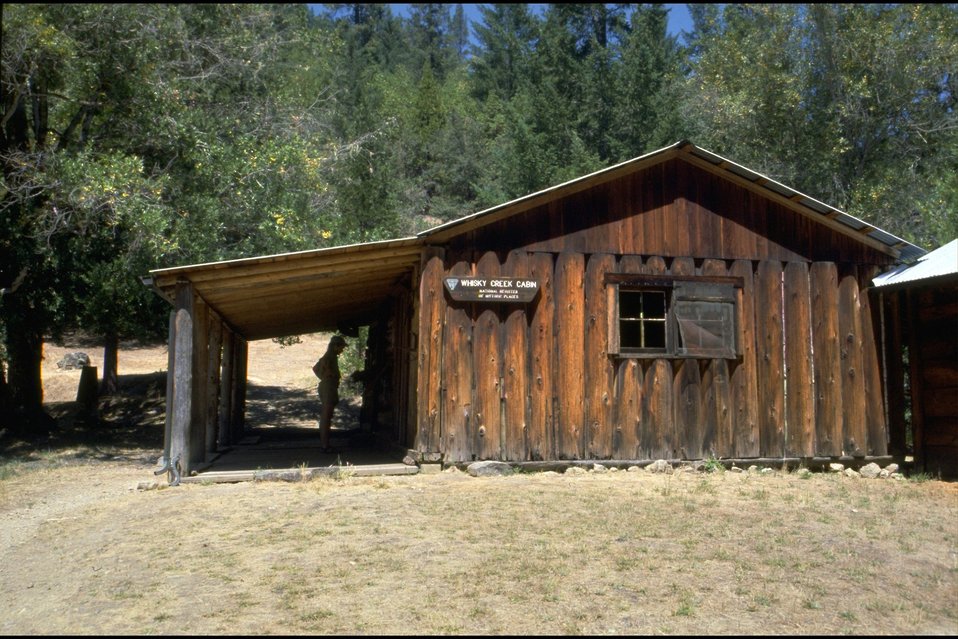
Rogue River - Whisky Creek Cabin, south side of cabin.